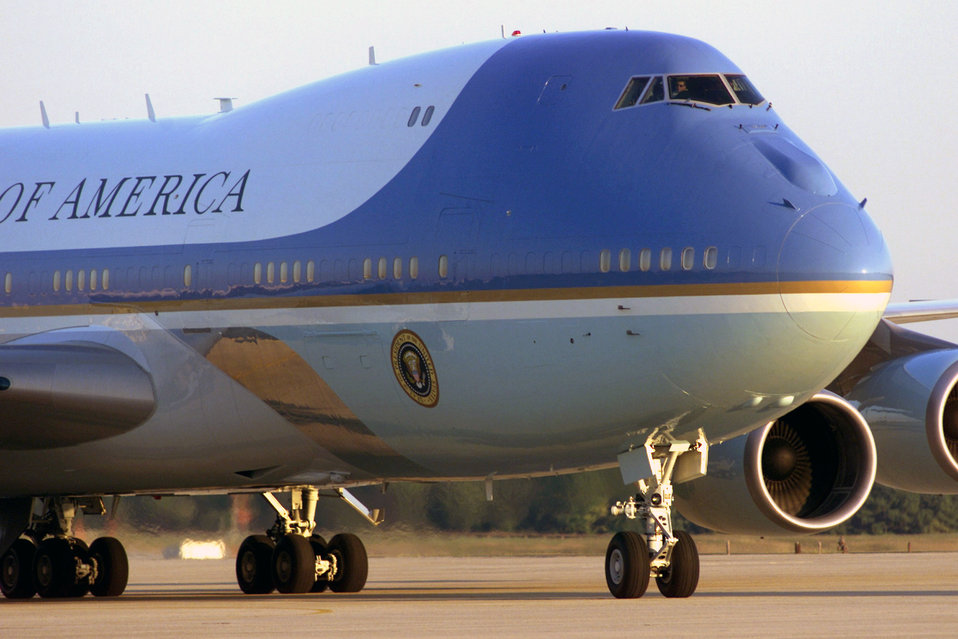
History shows AMC's strong response on 9-11

Air Force One arrives at Andrews Air Force Base, Md., on Sept. 11, 2001, with President George W. Bush on board. The president was in Florida when the terrorist attacks on the Pentagon, the World Trade Center in New York City, and in Pennsylvania too place. According to the Air Mobility Command History Office, tankers refueled fighters providing cover for Air Force One as the president moved from Florida. By Sept. 12, tankers also flew air refueling missions for the E-4B National Airborne Operations Center, the president's airborne command and control center.